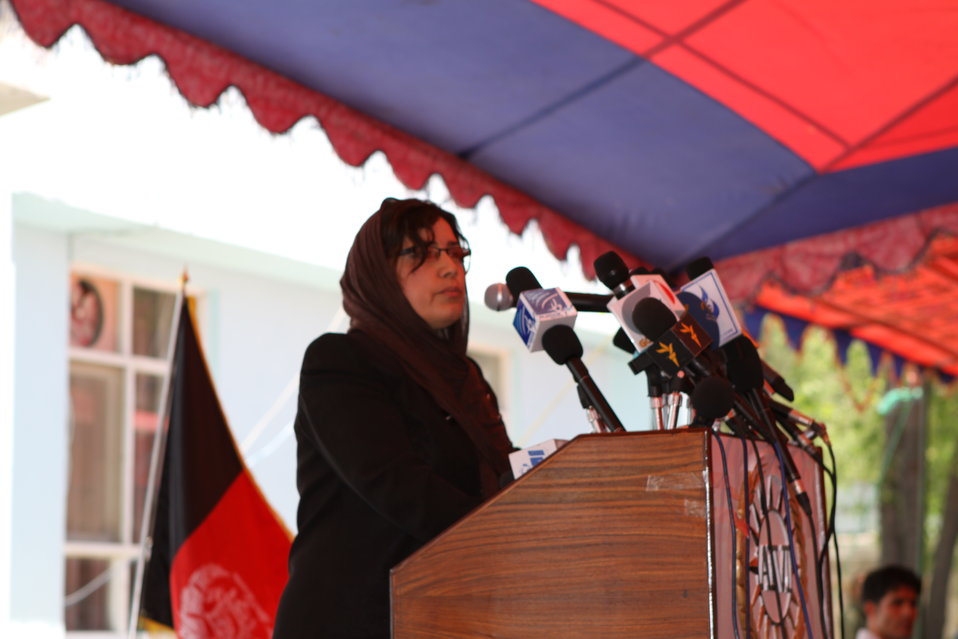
100522 ATVI Graduation 095